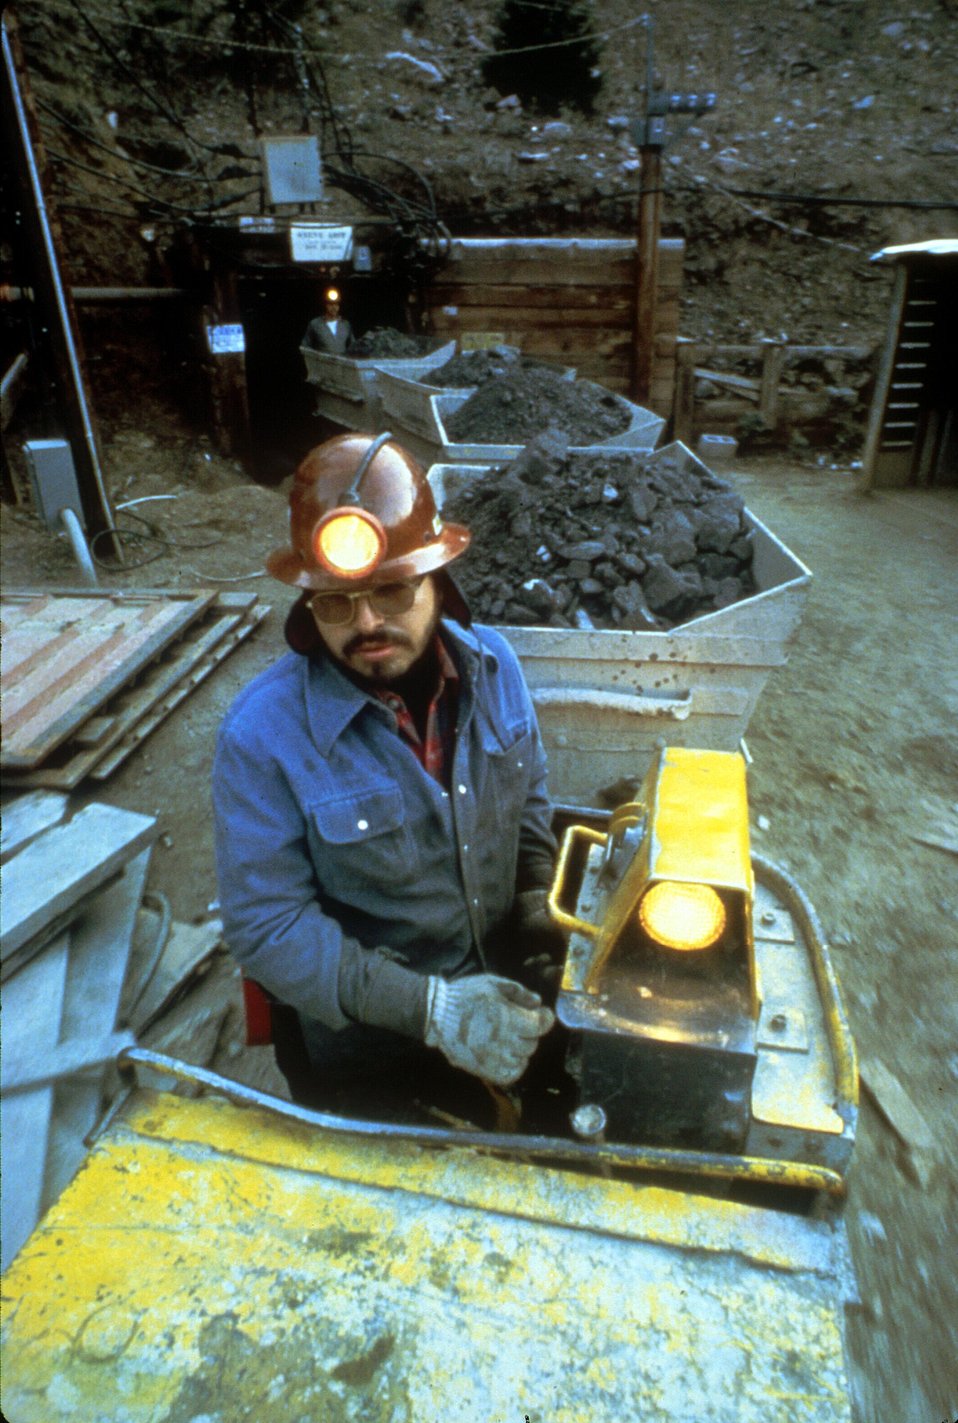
Swartzwalder Uranium Mine. c. undated